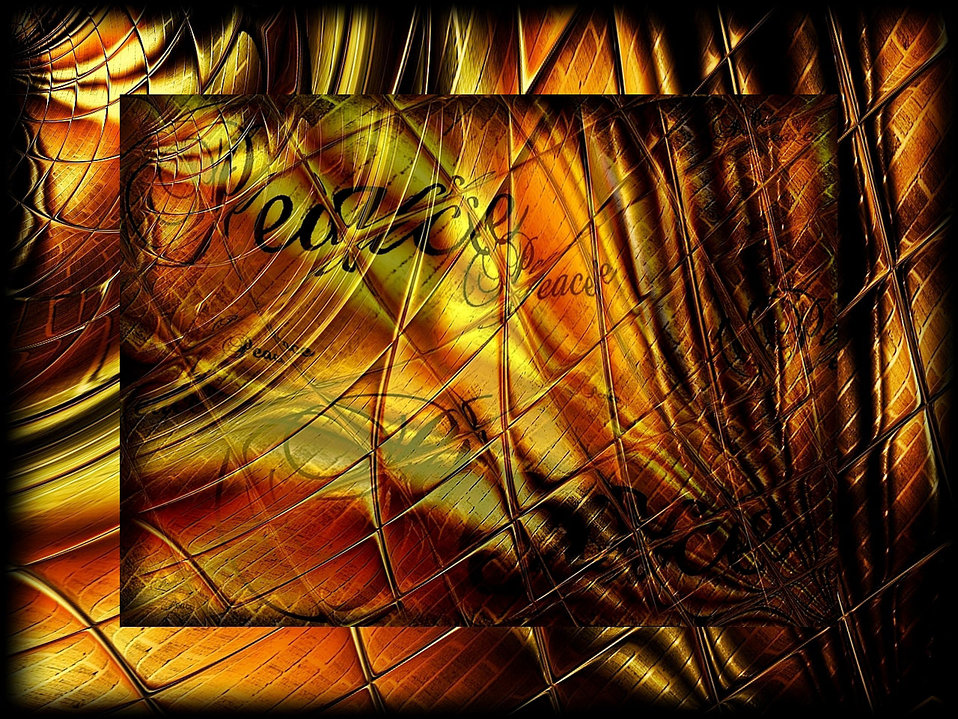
Peace

Digital painting background.